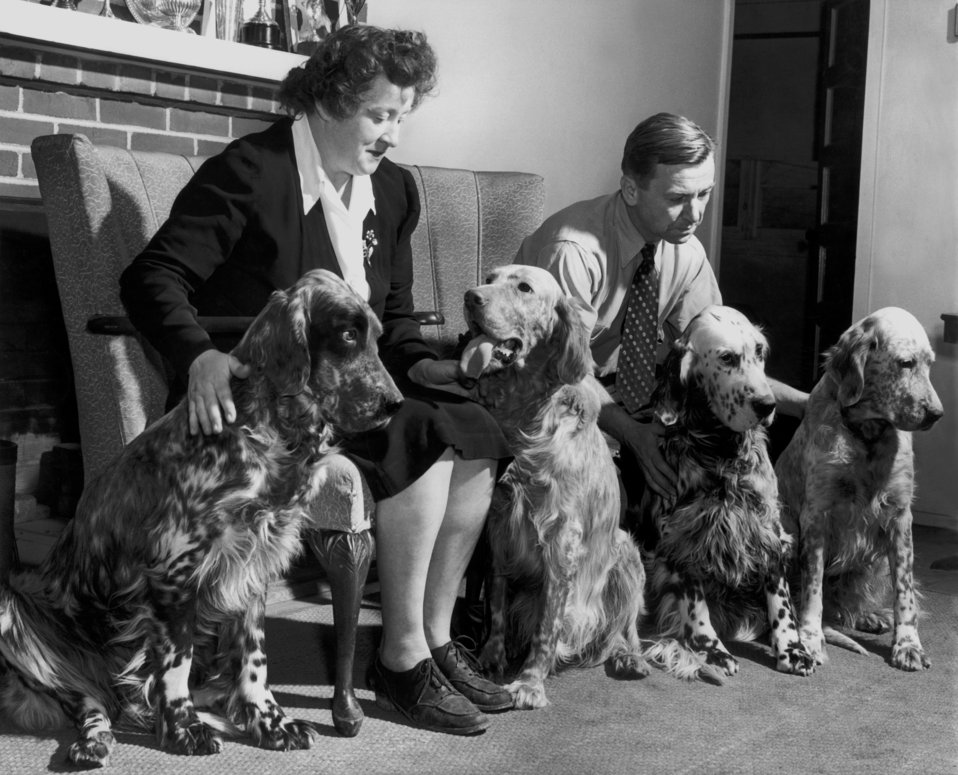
Dog Show dogs Oak Ridge

3347-2 DOE photo Ed Westcott Mr. and Mrs. Tirpak & Dogs Oak Ridge Tennessee 1947